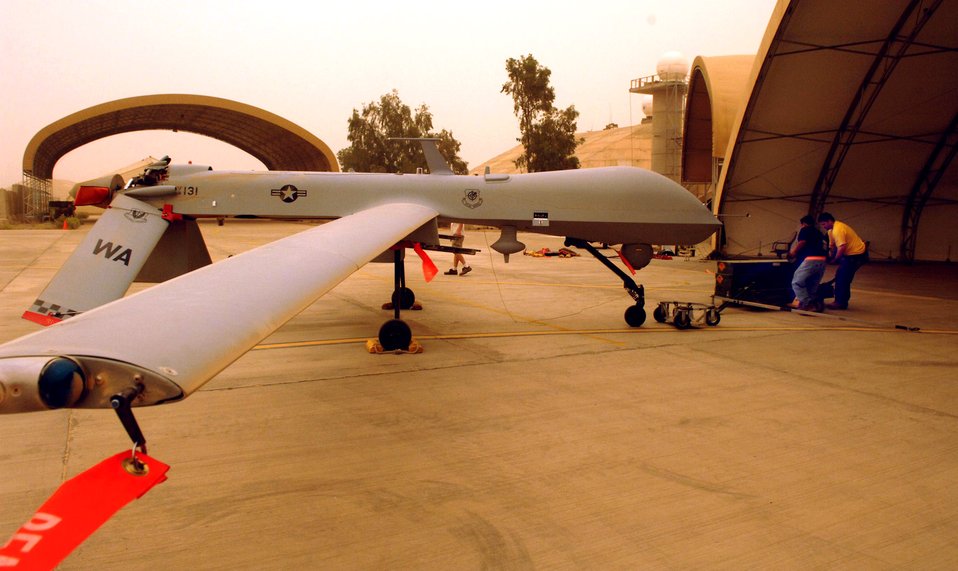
Predators wait to soar into Iraqi sky

Ben Roserug and Jim Dooley unload an AGM-114 Hellfire missile from an MQ-1 Predator unmanned aerial vehicle after a mission in May at Balad Air Base, Iraq. The Predator provides armed reconnaissance, airborne surveillance and target acquisition coalition forces. The Predator is a medium-altitude, long-endurance, remotely piloted aircraft.